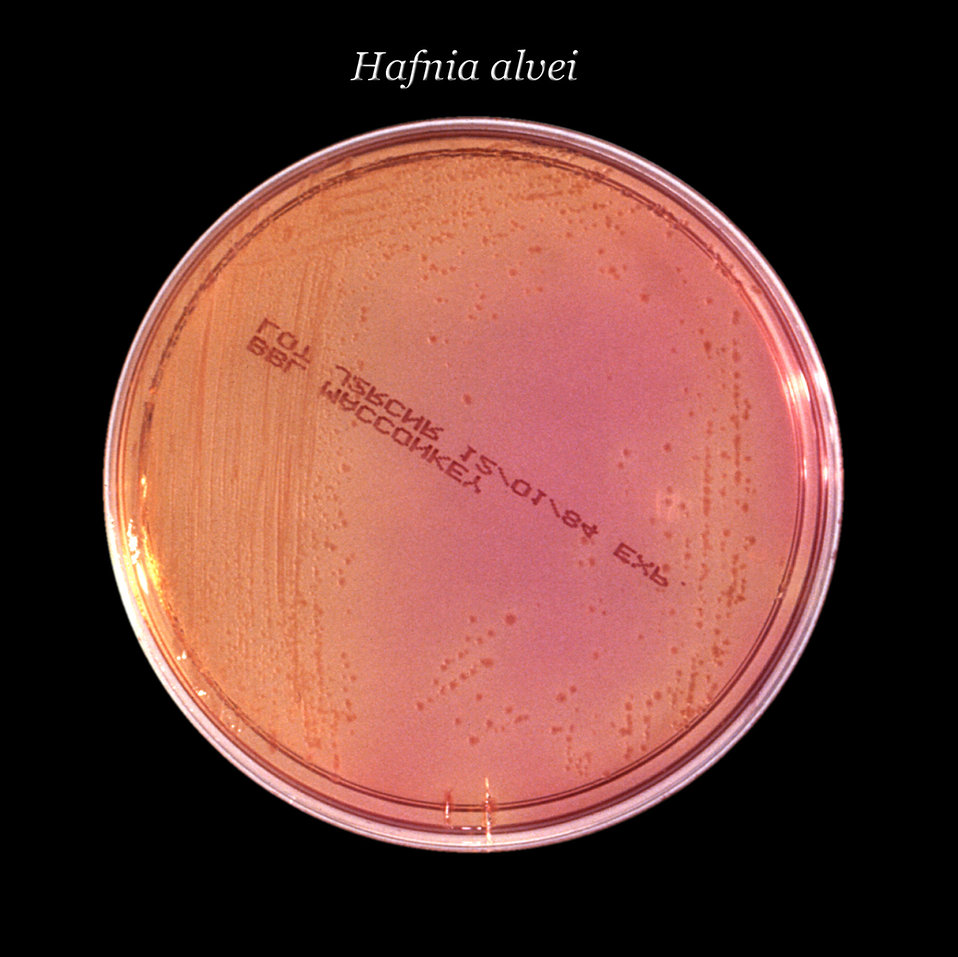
After 24 hours, this inoculated MacConkey agar culture plate cultivated colonial growth of Gram-negative, rod-shaped and facultatively anaerobic Hafnia alvei bacteria, which are also known as Enterobacter hafnia.